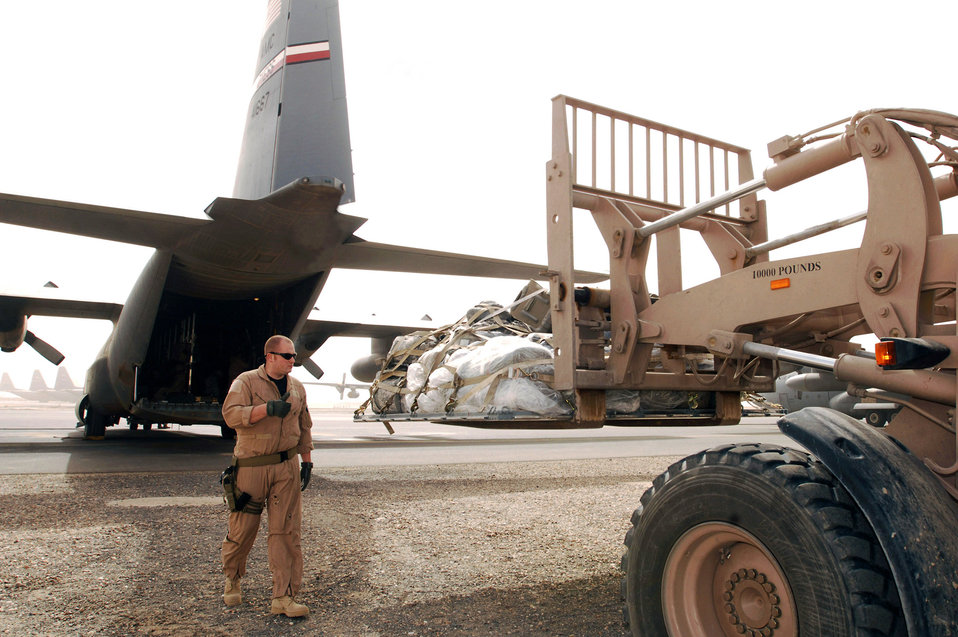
737th Expeditionary Airlift Squadron transporting coaliition forces

Senior Airman Ian Hunt marshals a 463L cargo pallet onto a C-130 Hercules at an air base in the Persian Gulf Region. The cargo pallet is bound for a base in Iraq. A part of his duties as loadmaster is to ensure cargo is loaded and unloaded in a safe manner and that it's secured to the aircraft, so it doesn't move during flight to bases throughout the theater. Airman Hunt is a C-130 loadmaster deployed with the 737th Expeditionary Airlift Squadron.